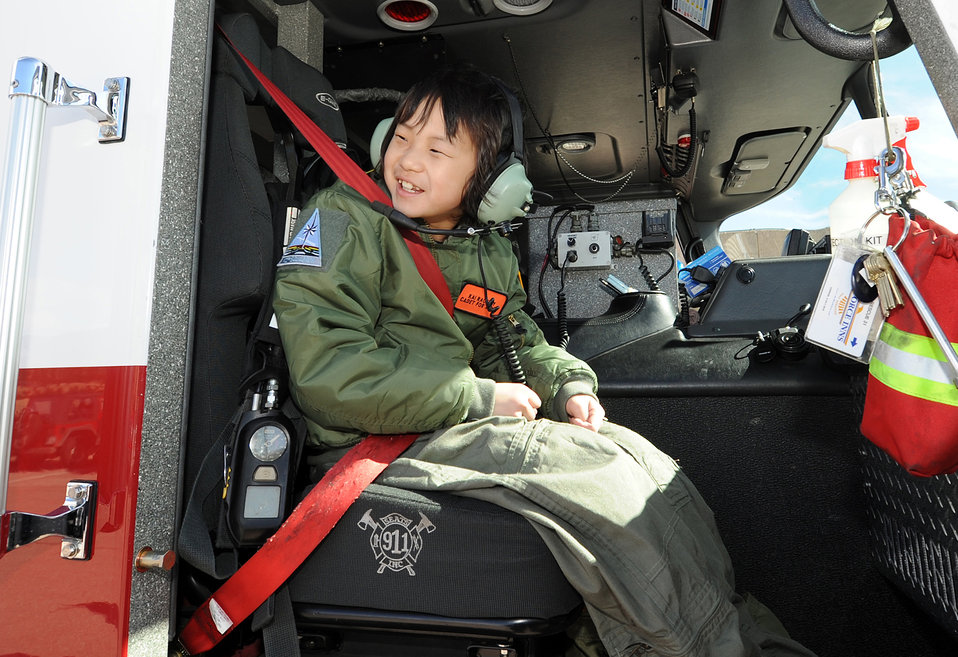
Academy cadets host cadet for a day

Cadet for a Day Kai Rackley hops into a fire truck near Fire Station 3 at the Air Force Academy March 5, 2010. Kai, who is 10, was diagnosed with leukemia in 2007 and has been in remission since 2009. The Cadet for a Day program is sponsored by the Make-A-Wish Foundation.